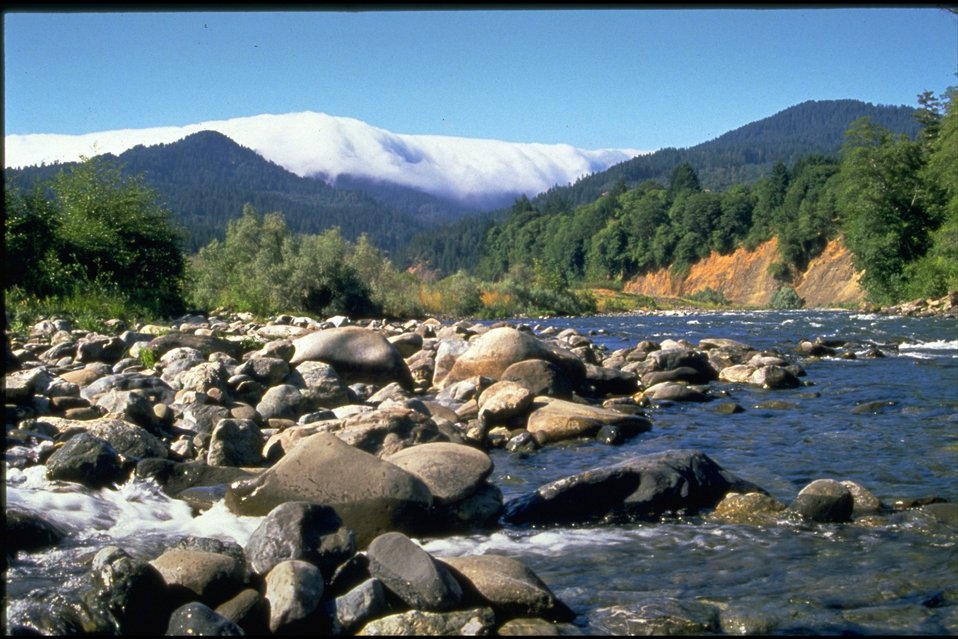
Rogue River - Watson Creek, Wild Section.